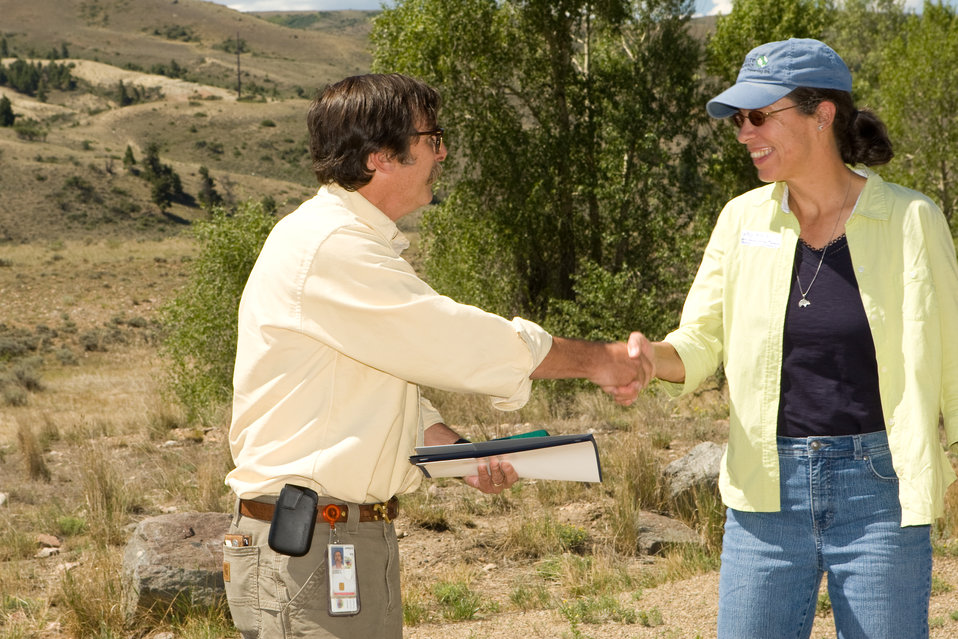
Colorado Rare Plant Conservation Initiative

The Colorado Rare Plant Conservation Initiative (RPCI) is a partnership of 23 statewide and regional agencies, private organizations, and academic institutions working to conserve 121 rare plants in Colorado. As part of these efforts the group developed the Colorado Rare Plant Conservation Strategy, developed Best Management Practices to reduce energy development impacts, addressed climate change, and developed focused strategies for the conservation of individual species at eight priority landscapes. The group has also worked to coordinate volunteer efforts for plant conservation across the state.